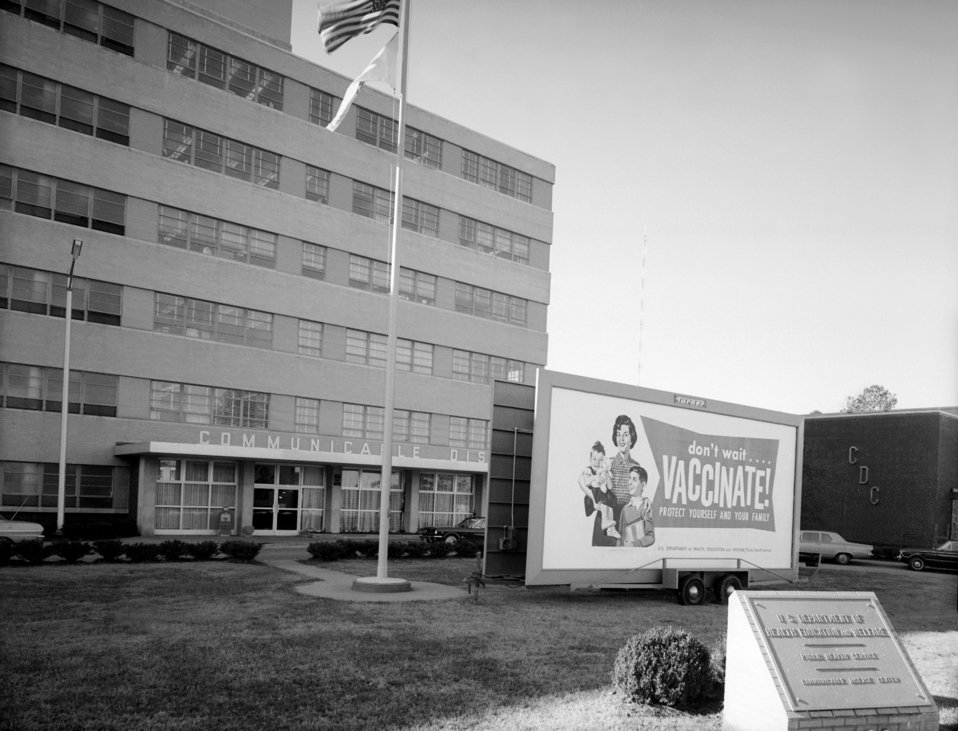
Signage promoting vaccination at the CDC, Clifton Road Offices, Atlanta, Georgia.